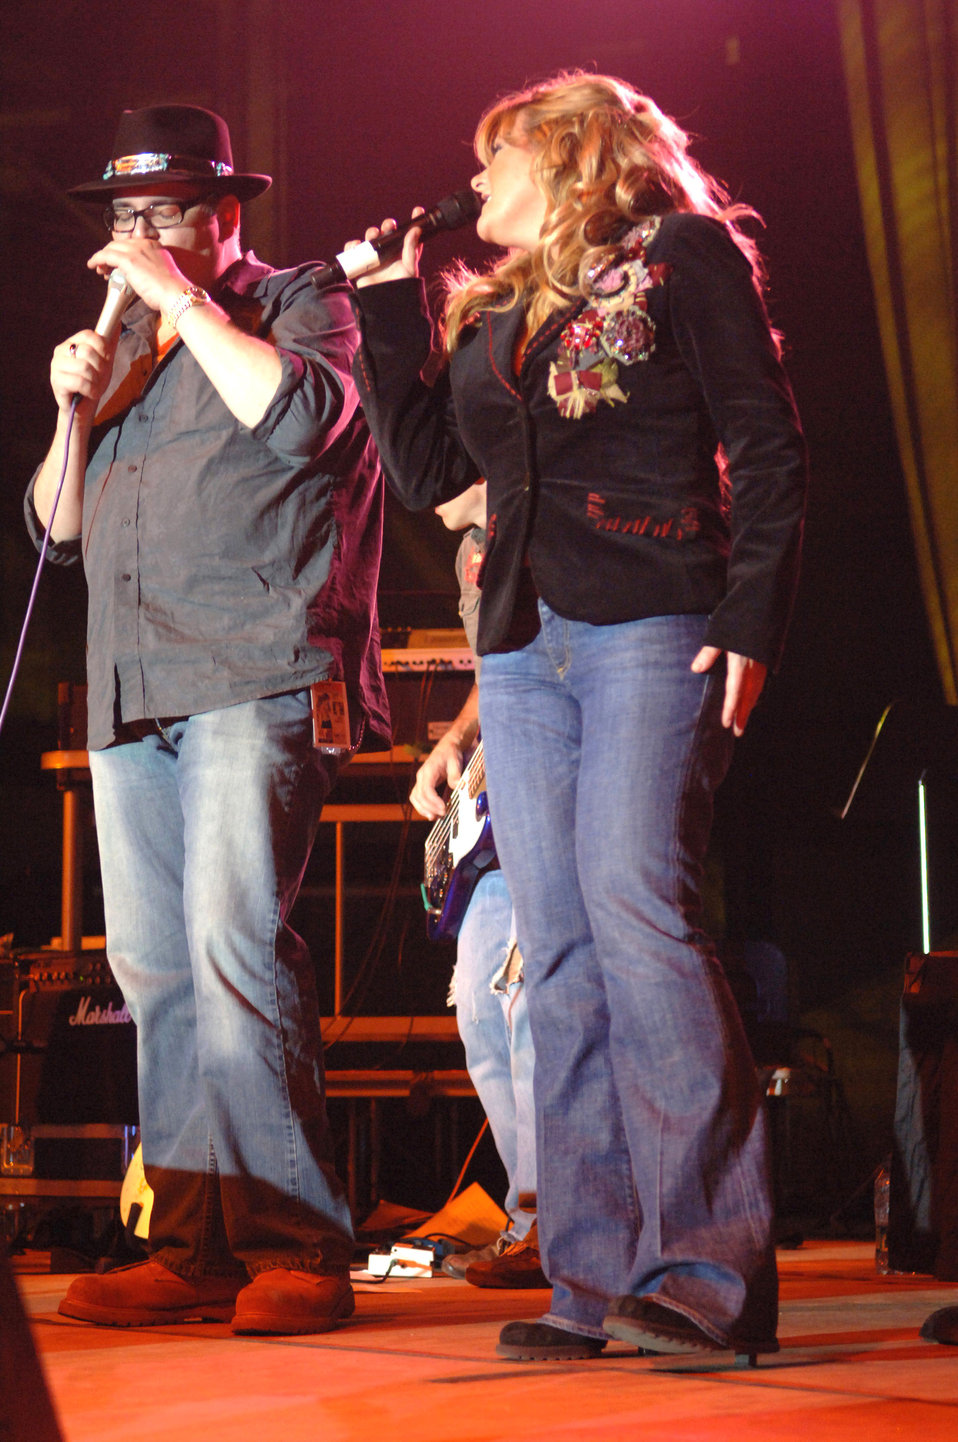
Performers bring holiday cheer to the 'Lik'

John Popper of the platinum-selling group, Blues Traveler, plays the harmonica while country music artist Jamie O'Neal sings during the Operation Season's Greetings concert Nov. 22 at Incirlik Air Base, Turkey.